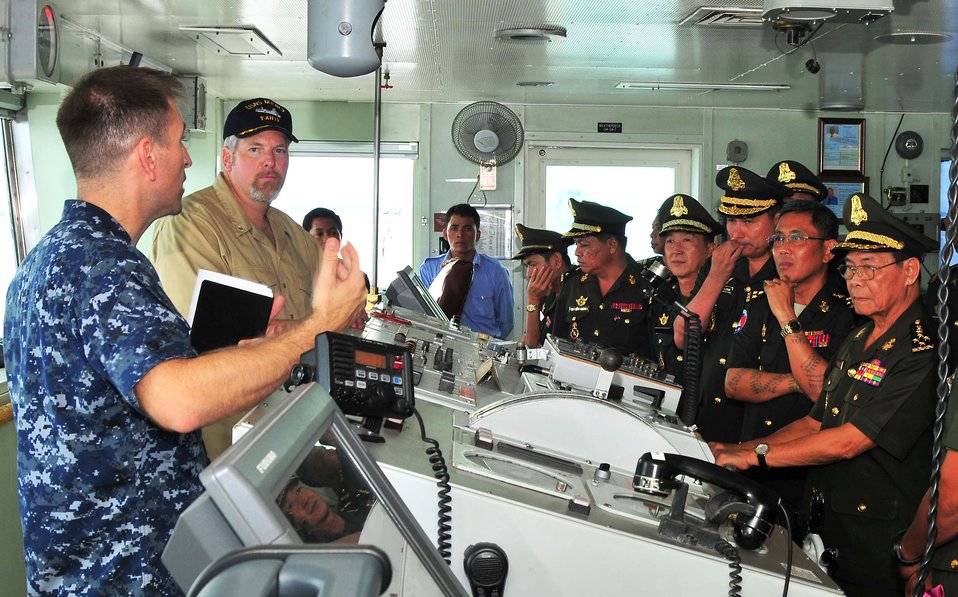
Lt. Cmdr. Daniel Kuriger Answers Questions

Lt. Cmdr. Daniel Kuriger, chief staff officer of Pacific Partnership 2010, answers questions while the Secretary of State, Ministry of National Defense for Cambodia, H.E. Gen. Phan Nguon, tours the bridge of the Military Sealift Command hospital ship USNS Mercy (T-AH 19) on June 26, 2010, in Sihanoukville, Cambodia. Mercy is in Cambodia conducting Pacific Partnership 2010, the fifth in a series of annual U.S. Pacific Fleet humanitarian and civic assistance endeavors designed to strengthen regional partnerships.